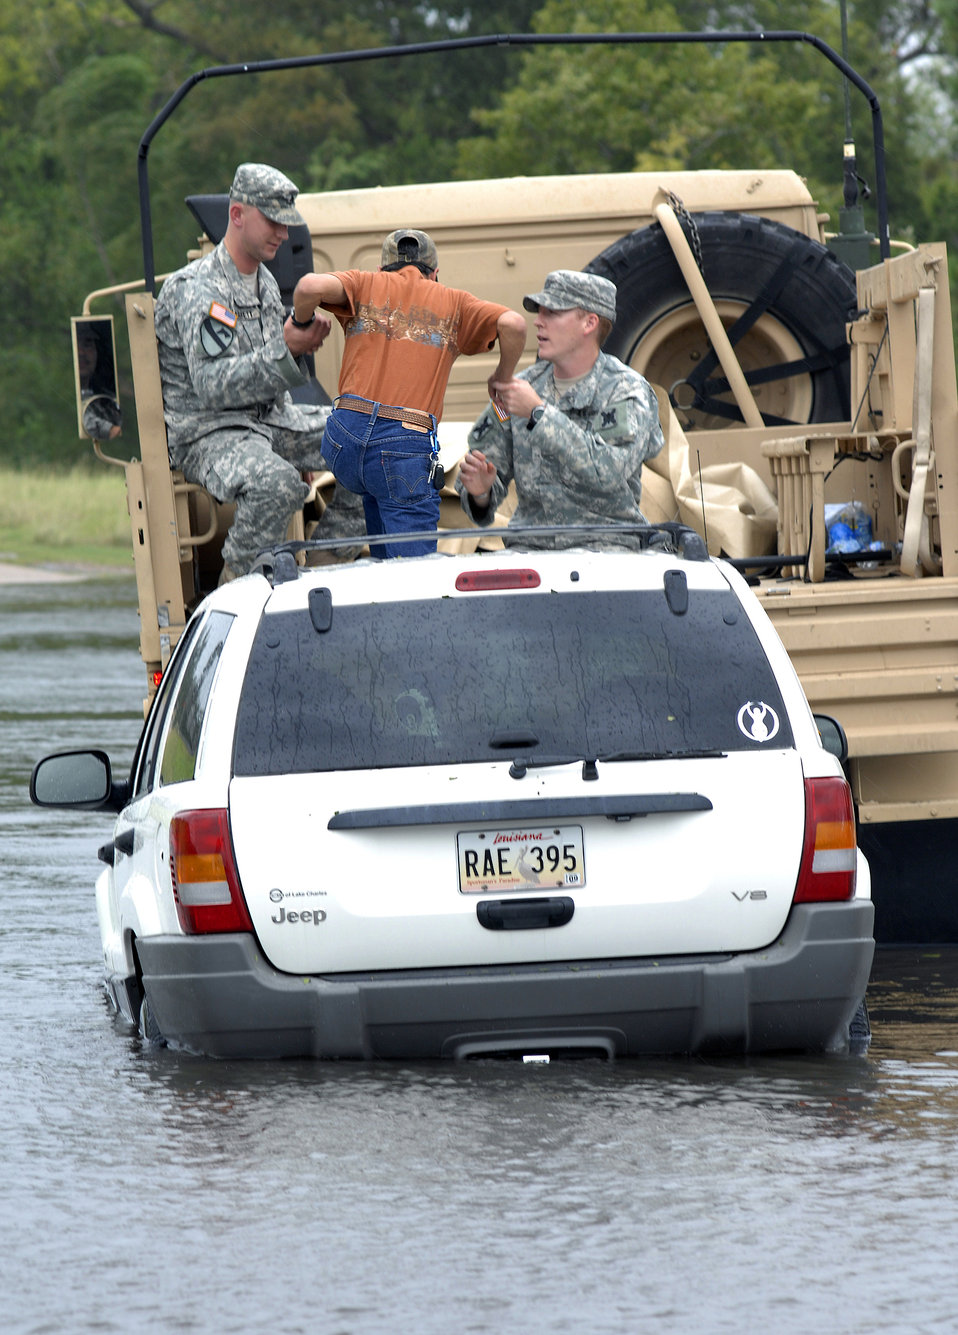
Watchful Eye

Army Capt. Colin Smith and Staff Sgt. Michael Barrett pull Vicky O'Quain from her flood damaged vehicle during a high-water search and rescue mission in Lake Charles, La., Sept. 13. Capt. Smith and Staff Sgt. Barrett are assigned to the Louisiana Army National Guard, Bravo Company, 3rd Battalion, 156th Infantry.